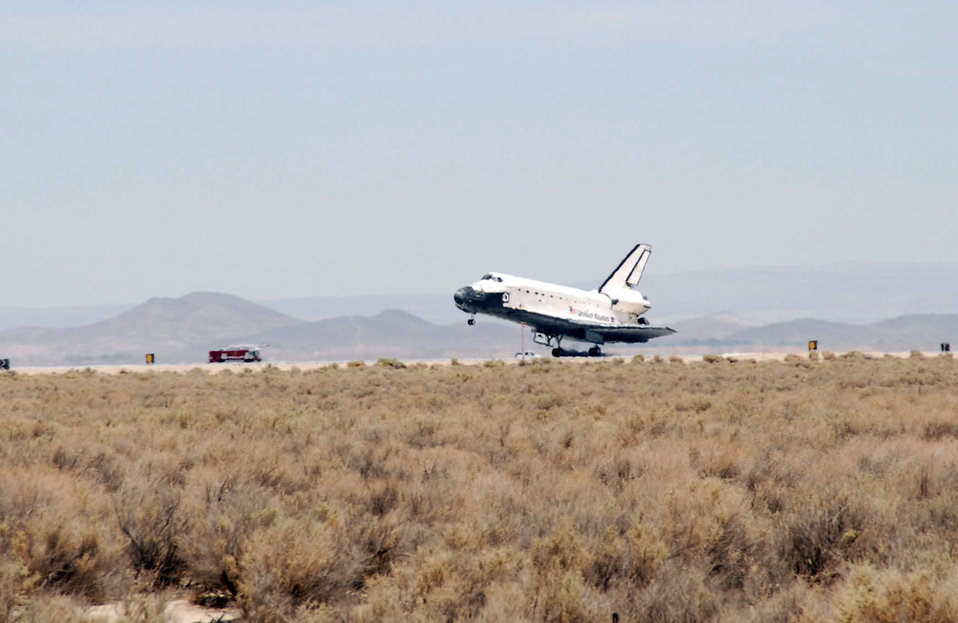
Space Shuttle Atlantis arrives at Edwards

Space Shuttle Atlantis, STS-117, performs a successful landing at Edwards Air Force Base, Calif., on June 22. The shuttle started its mission June 8 to perform maintenance on the International Space Station. STS-117 was the 21st mission to the space station and the 118th shuttle mission overall. The Atlantis landing marks Edwards' 51st shuttle landing. The next shuttle mission is scheduled to launch in August.